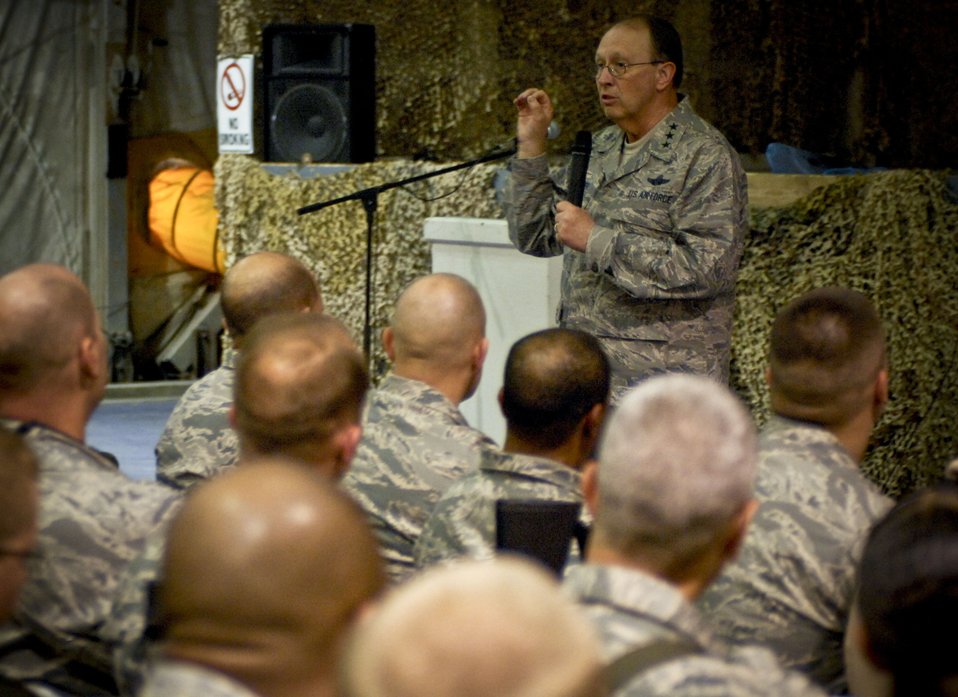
Lt. Gen. Stenner visits Southwest Asia AOR

Lt. Gen. Charles Stenner Jr., commander of Air Force Reserve Command and chief of the Air Force Reserve, speaks to Airmen at Bagram Airfield, Afghanistan, April 7 during a multi-base visit to the Air Forces Central area of responsibility. General Stenner spoke about the role of reservists in the theater. He is visiting the AOR to speak with Airmen and listen to their concerns.